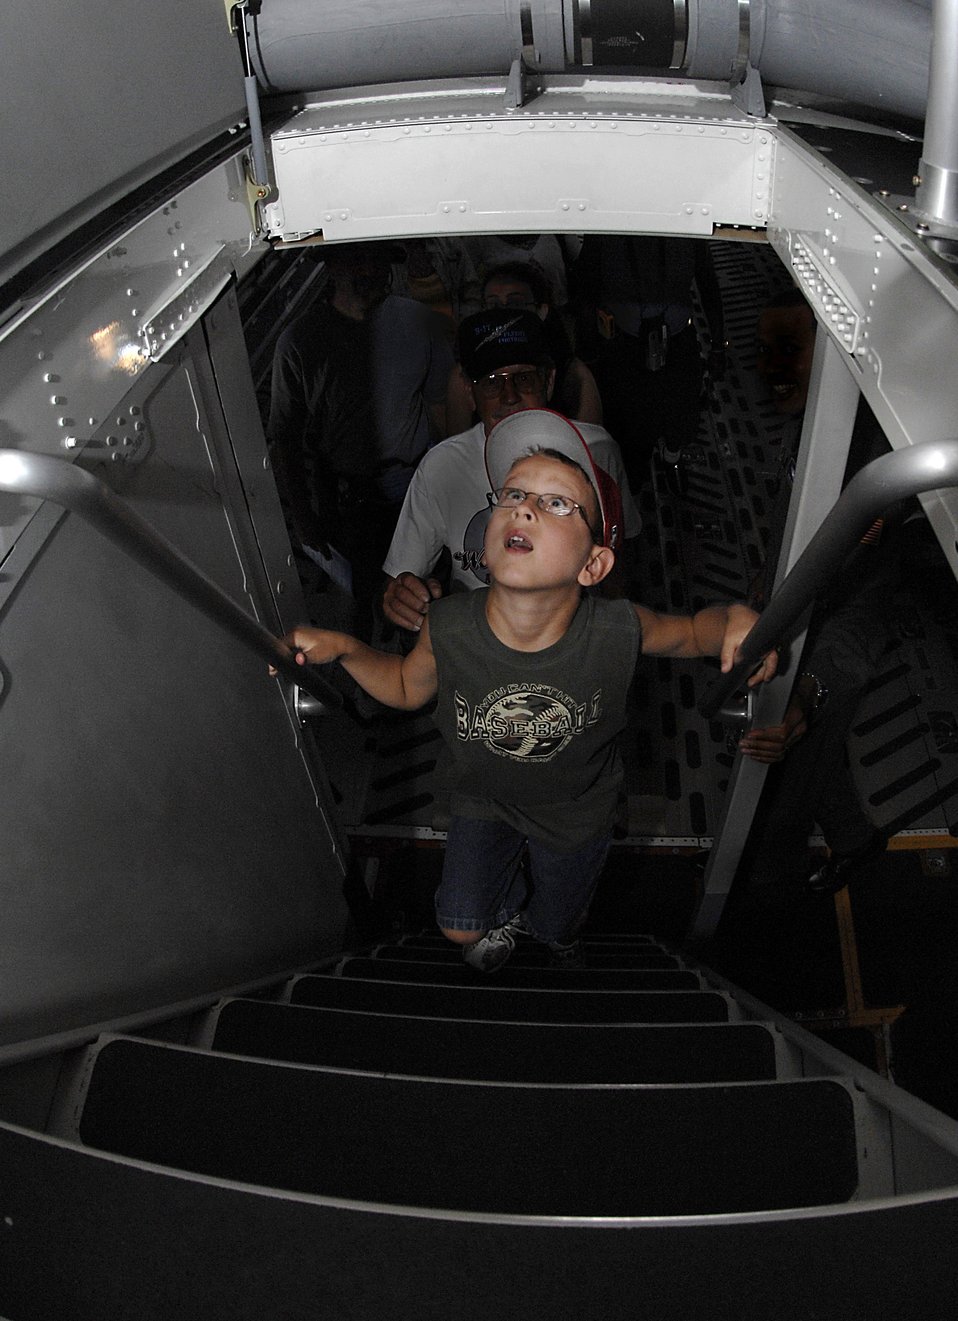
California Air Force Week

Michael Schoonmaker,7, takes a moment to view the inside of a C-17 Globemaster III at the California Capital Air Show in Sacramento, Calif., on Jun. 9. The air show was the last event of Air Force Week California. The purpose of Air Force Week is to inform and educate the American public about the importance and roles of the Air Force in America's national defense. Over 50,000 people attended the air show featuring the Air Force Thunderbirds and numerous Air Force aircraft.